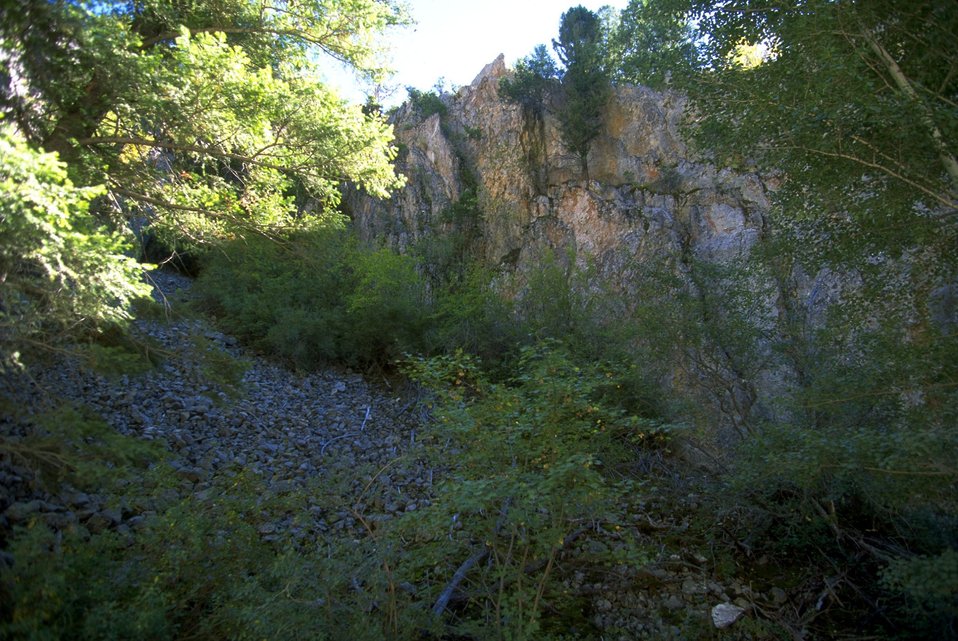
Rattler Gulch-Limestone Cliffs ACEC (area of critical environmental concern)